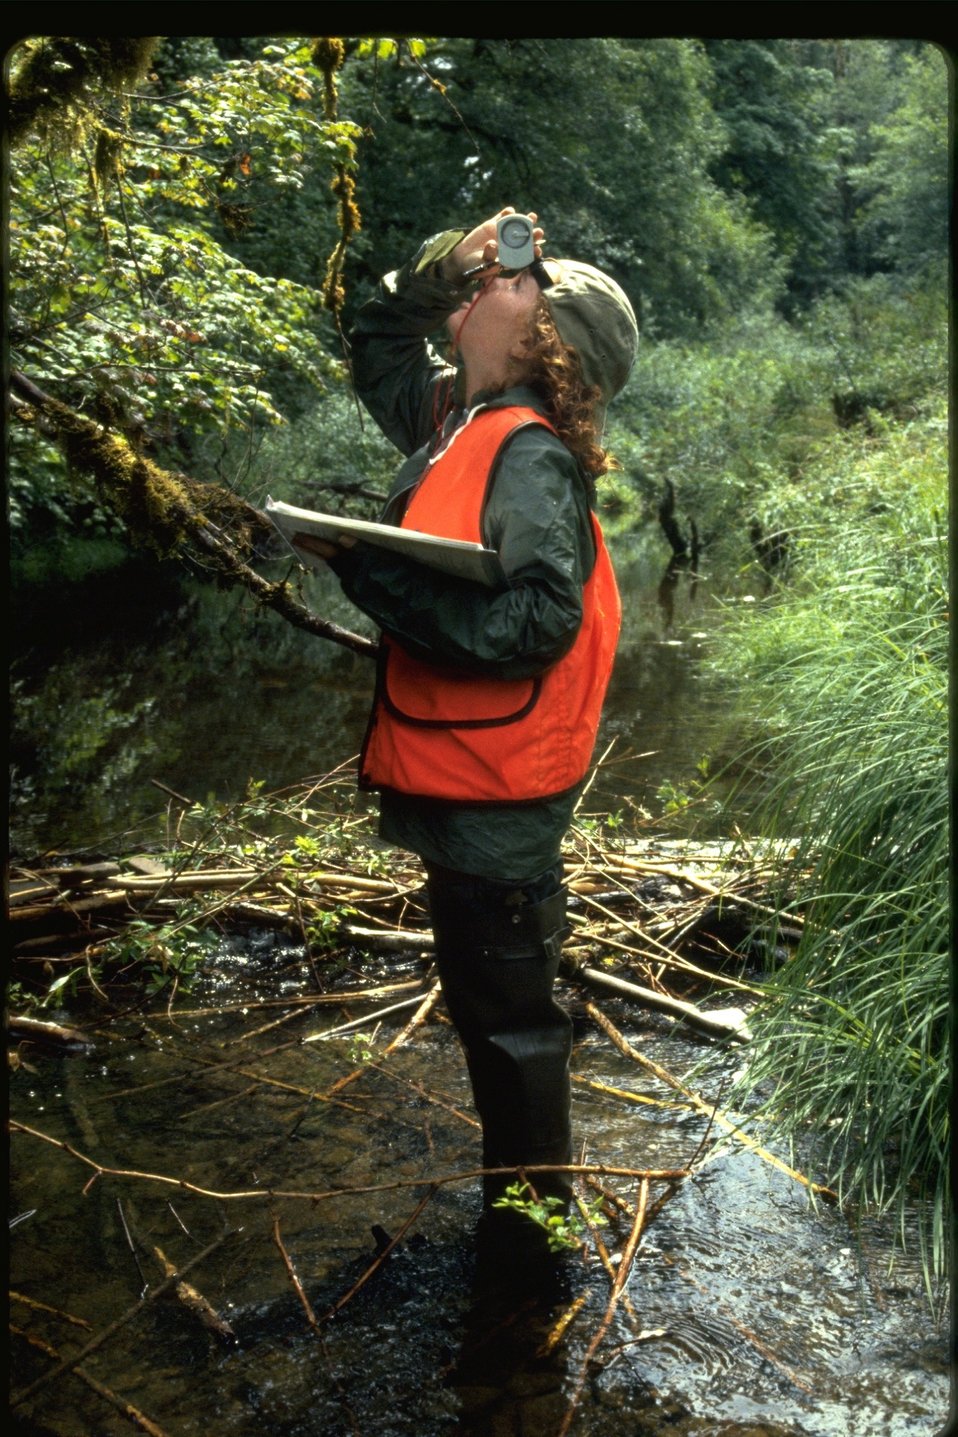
Sarah surveying Smith Creek during habitat study.